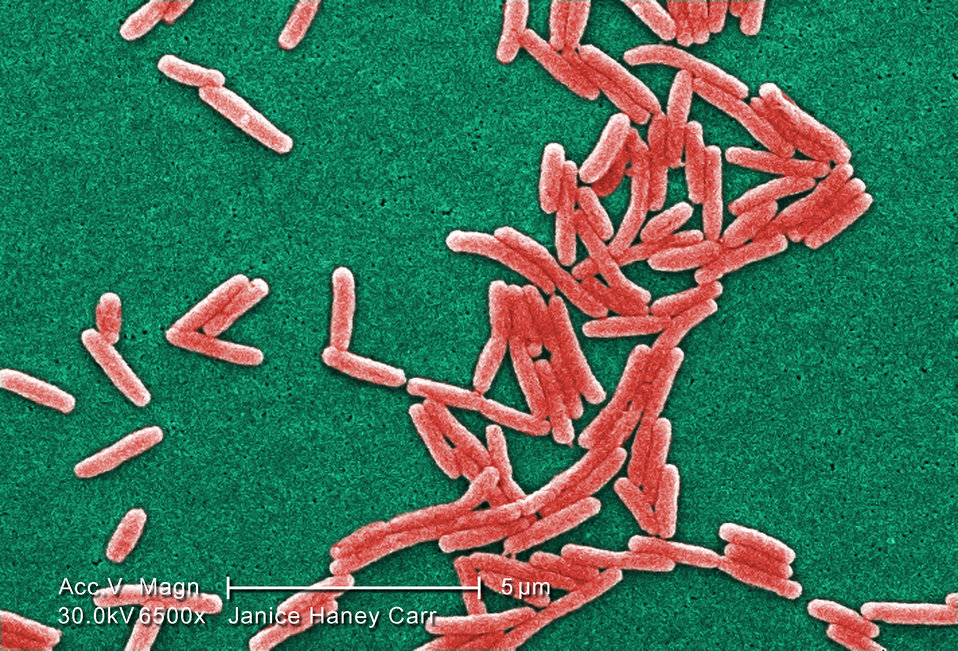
Under a high magnification of 6500X, this colorized scanning electron micrograph (SEM) depicted a large group of Gram-negative Legionella pneumophila bacteria. Please see PHIL 11092 through 11152 for additional SEMs of these organisms, and specifically PHIL 11094 for a black and white version of this image.